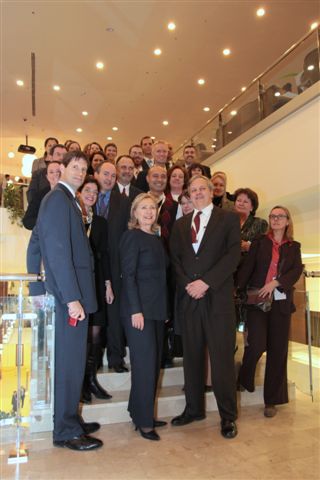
Secretary Clinton Poses for a Photo With OSCE Leaders

U.S. Secretary of State Hillary Rodham Clinton poses for a photo with other leaders at the OSCE Summit Plenary Session, in Astana, Kazakhstan, on December 1, 2010.